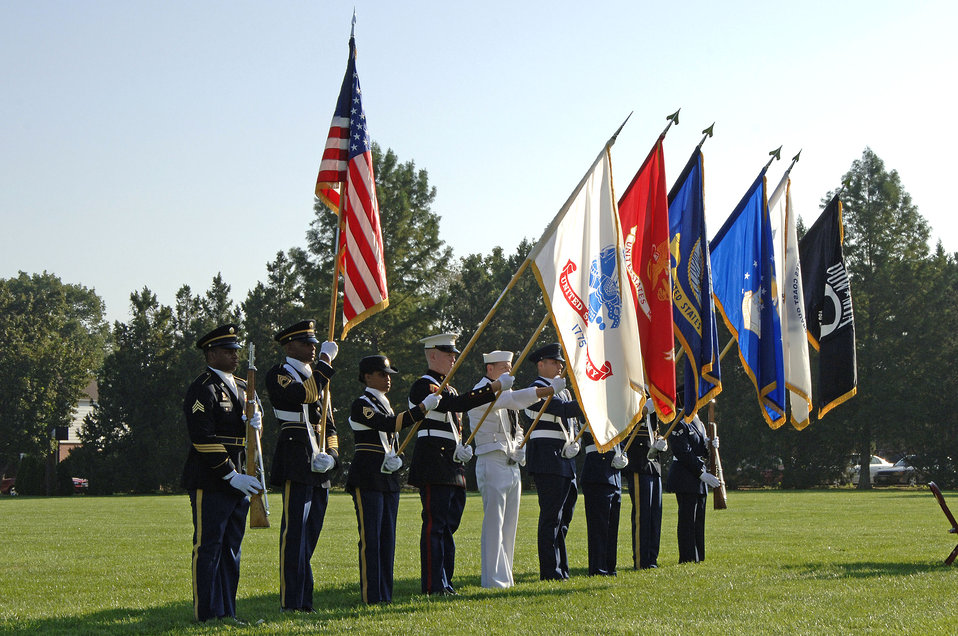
POW/MIA ceremony at Scott AFB

The United States Transportation Command honor guard presents the colors during a POW/MIA memorial ceremony at Scott Air Force Base, Ill., Sept. 15.